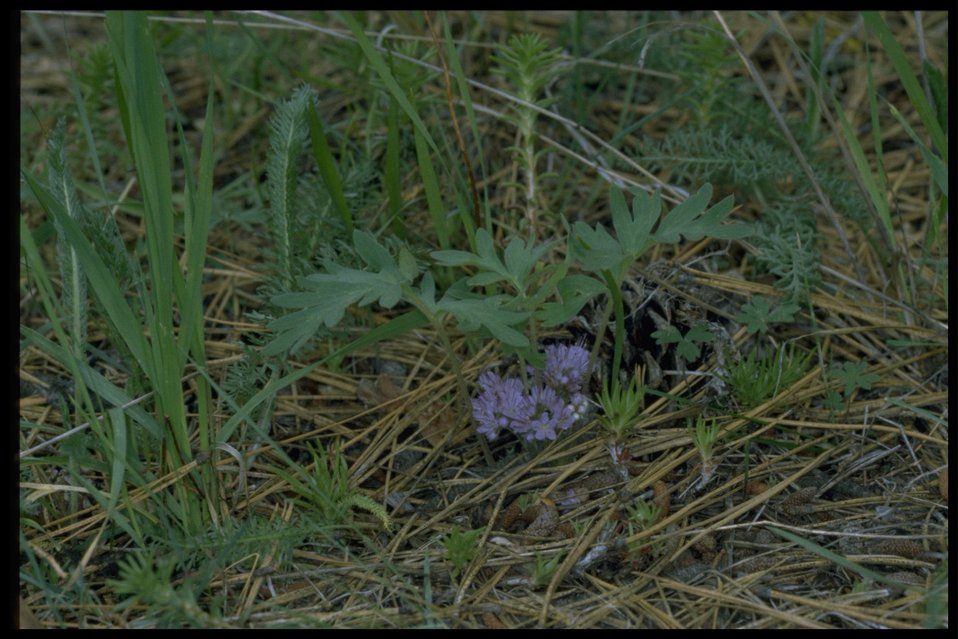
Farshot of ballhead waterleaf (Hydrophyllum capitatum var. capitatum).